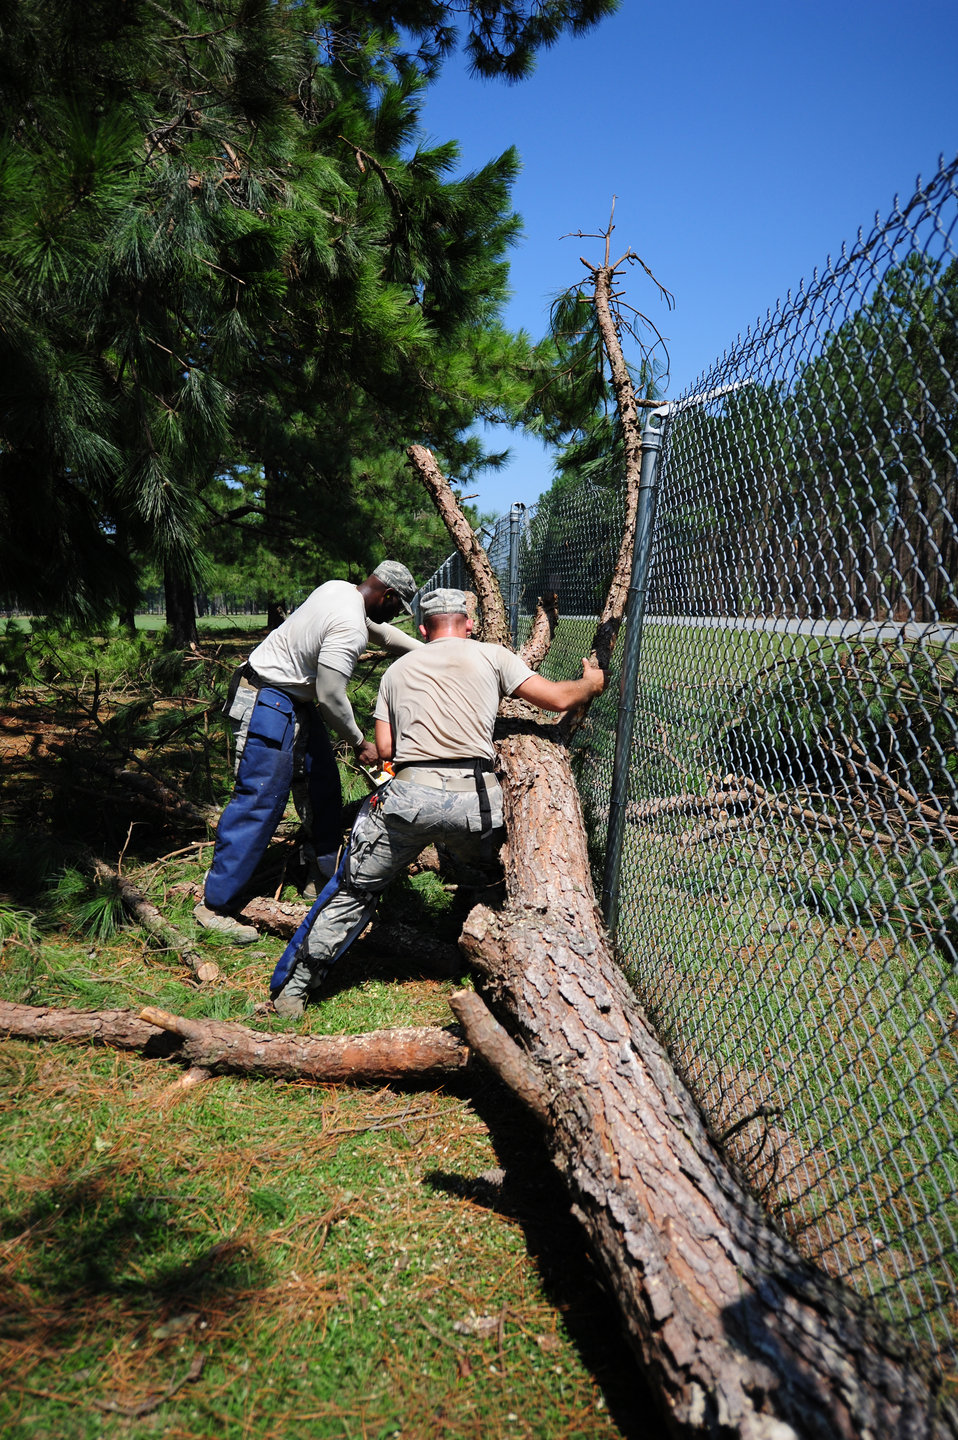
SJAFB cleans up after Irene

Staff Sgts. Emanuel Shiver and Tim Loyd work to remove a tree limb that fell against the perimeter fence near the Oak Forest Gate on Seymour Johnson Air Force Base, N.C., Aug. 28, 2011. Two crews from the 4th Civil Engineer Squadron Heavy Equipment Flight were charged to check for trees and limbs that had fallen against the perimeter fence after Hurricane Irene hit the Carolina coast. Both Shiver and Loyd are members of the 4th CES Heavy Equipment Flight.